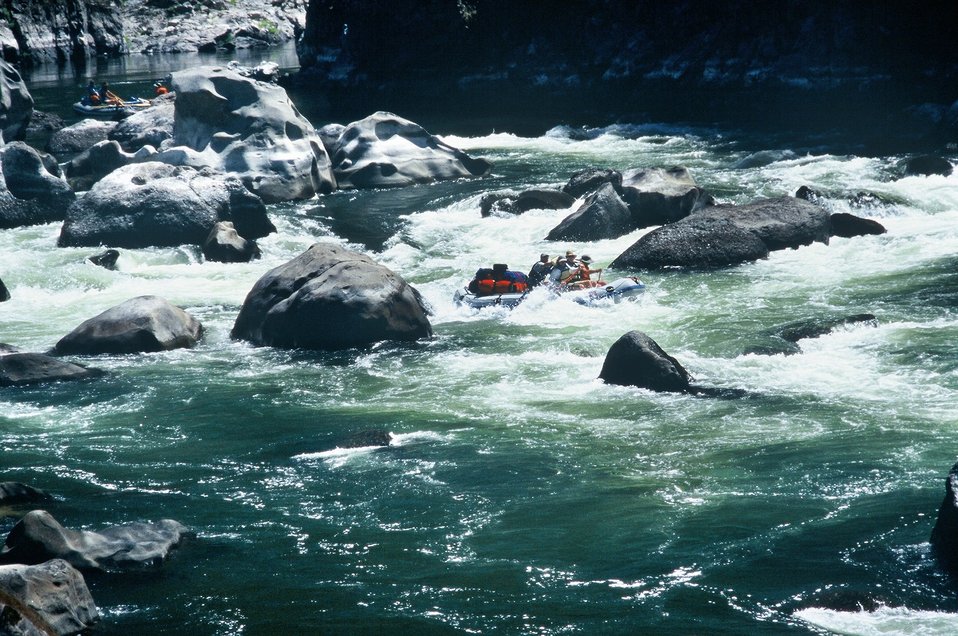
Blossom Rapids